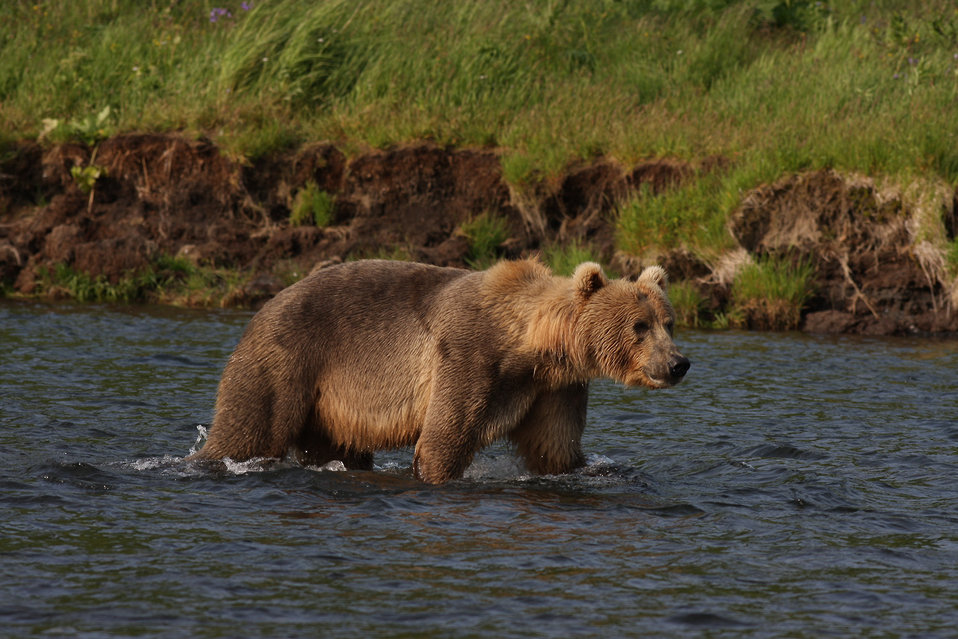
Scouting for fish

Kodiak brown bear in Dog Salmon River.
Lisa Hupp/USFWS